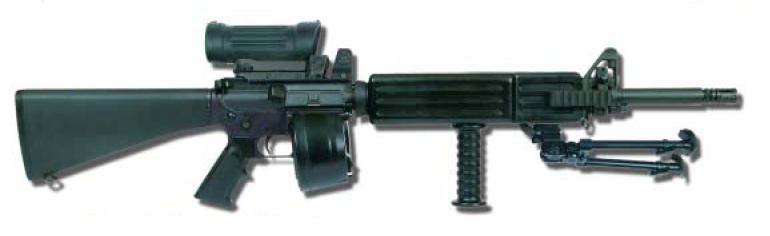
Danish LSV (Light Support Weapon) M/04 with optical sight Dansk: LSV (Let Støtte Våben) M/04 med påmonteret optisk sigte